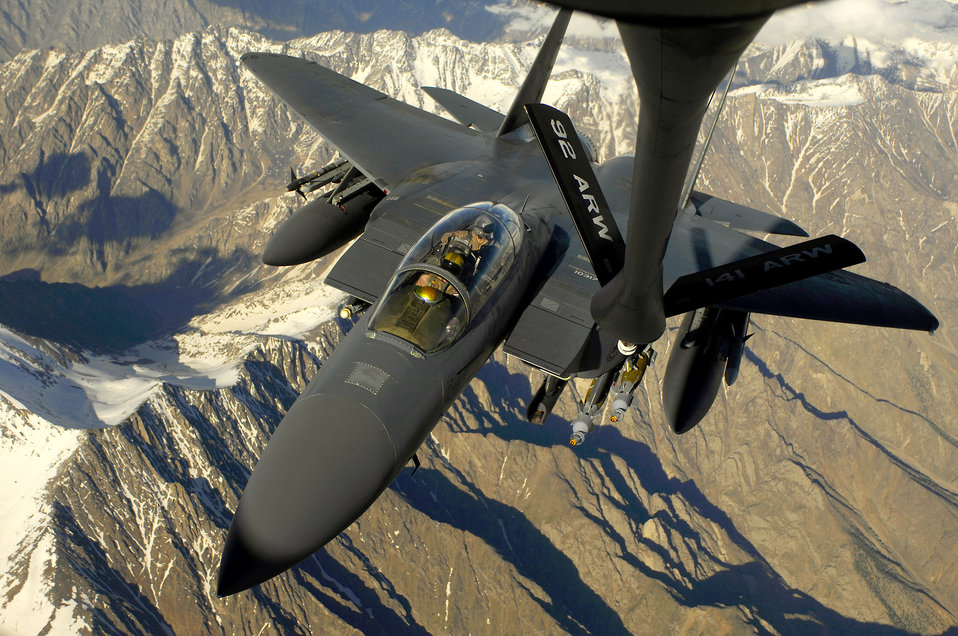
June 1 airpower summary: F-15s conduct show of force

An Air Force F-15E Strike Eagle aircraft moves into position to receive fuel May 29, 2008 from a KC-135 Stratotanker during a mission over Afghanistan. The F-15E is deployed from Royal Air Force Lakenheath, U.K. and the KC-135 is assigned to the 22nd Expeditionary Air Refueling Squadron, 376th Air Expeditionary Wing Manas Air Base, Kyrgyzstan and is deployed from 141st Air Refueling Wing Fairchild Air Force Base, Wash.